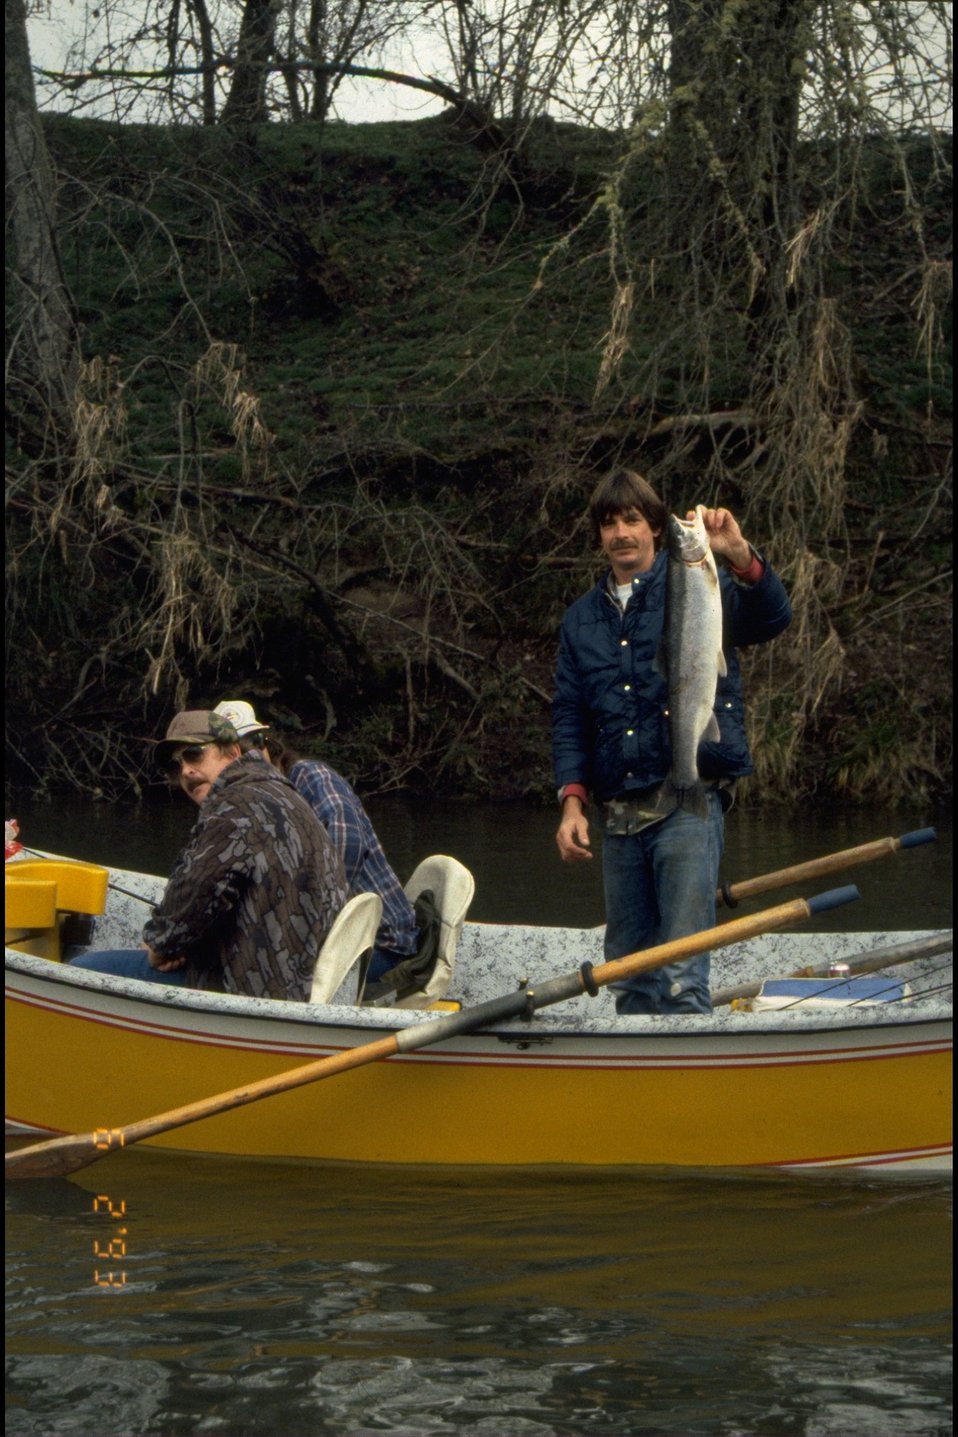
Rogue River - Near Whitehorse Park. Hellgate Recreation Area, drift boat fishing for steelhead.